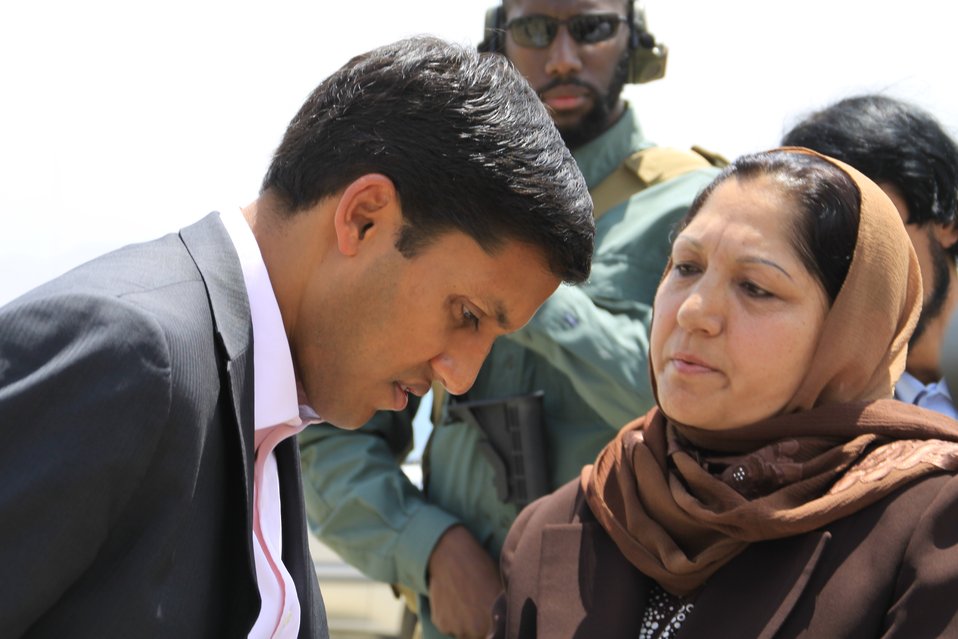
Badam Bagh Farm